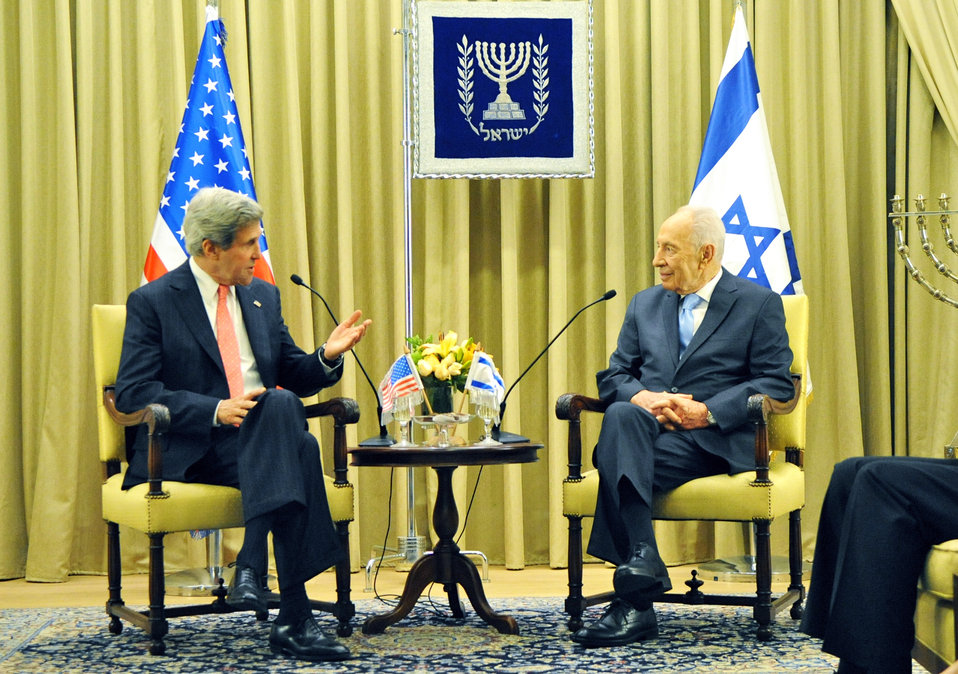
Secretary Kerry Meets With Israeli President Peres

U.S. Secretary of State John Kerry meets with Israeli President Shimon Peres in Jerusalem on May 23, 2013.